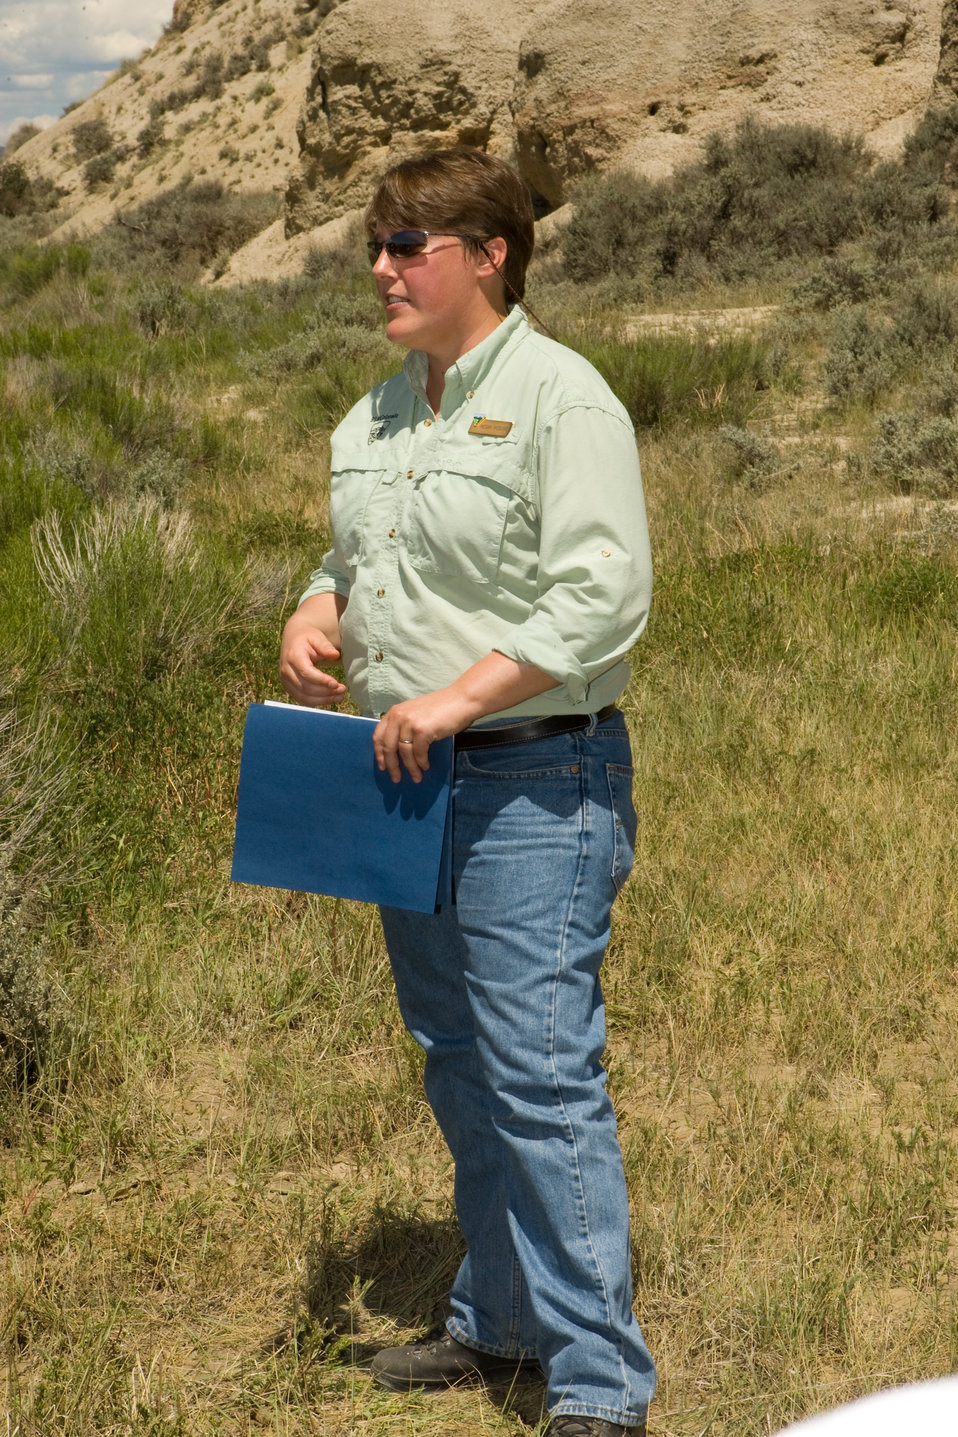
Colorado Rare Plant Conservation Initiative

The Colorado Rare Plant Conservation Initiative (RPCI) is a partnership of 23 statewide and regional agencies, private organizations, and academic institutions working to conserve 121 rare plants in Colorado. As part of these efforts the group developed the Colorado Rare Plant Conservation Strategy, developed Best Management Practices to reduce energy development impacts, addressed climate change, and developed focused strategies for the conservation of individual species at eight priority landscapes. The group has also worked to coordinate volunteer efforts for plant conservation across the state.